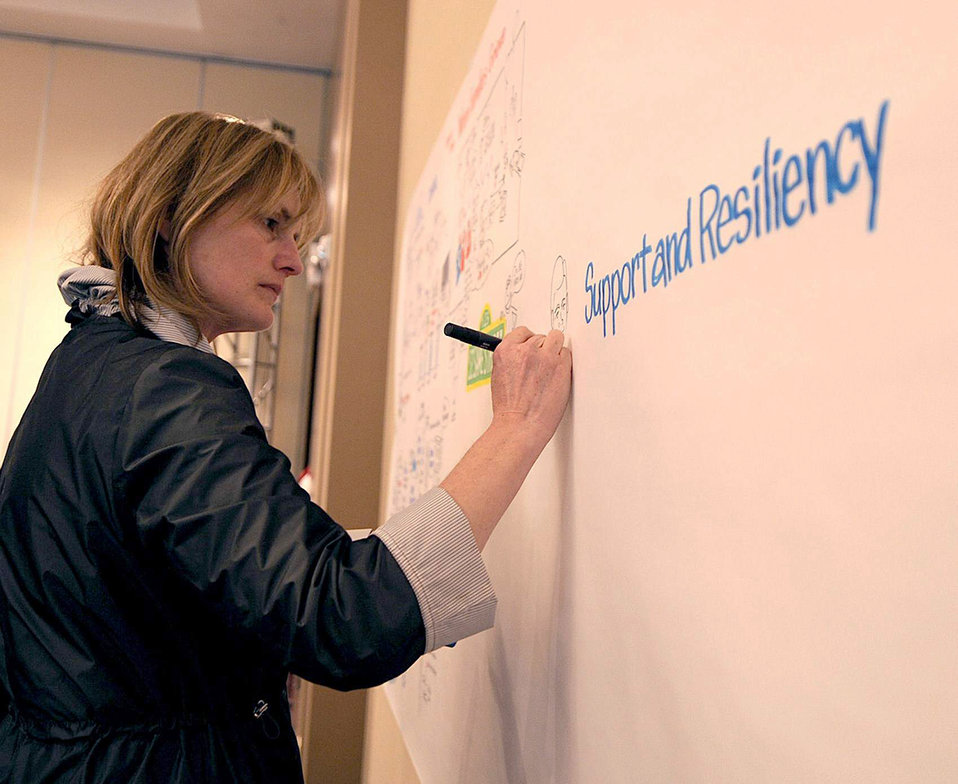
Caring for People Forum wraps up

Kriss Wittman illustrates a summary of the topics and discussions April 19, 2010, at the Caring for People Forum in Washington, D.C. The three-day forum brought together Airmen from around the world and a variety of support functions to address how to better care for Airmen in their families across the service.